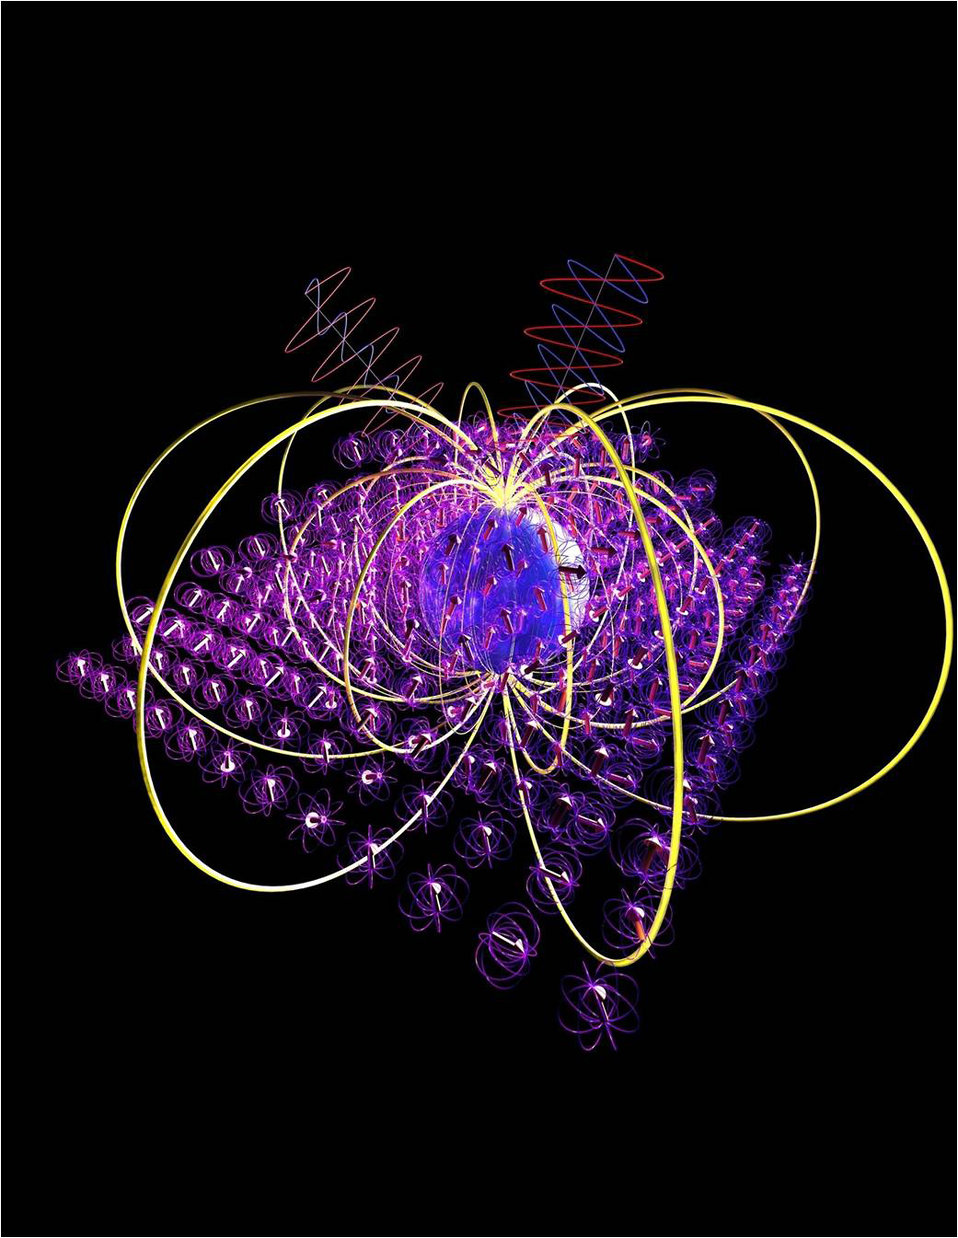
Air Force officials fund super-fast, secure computing

Air Force Office of Scientific Research-supported physicists at the University of Michigan are developing innovative components for quantum, or super-fast, computers that will improve security for data storage and transmission on Air Force systems.